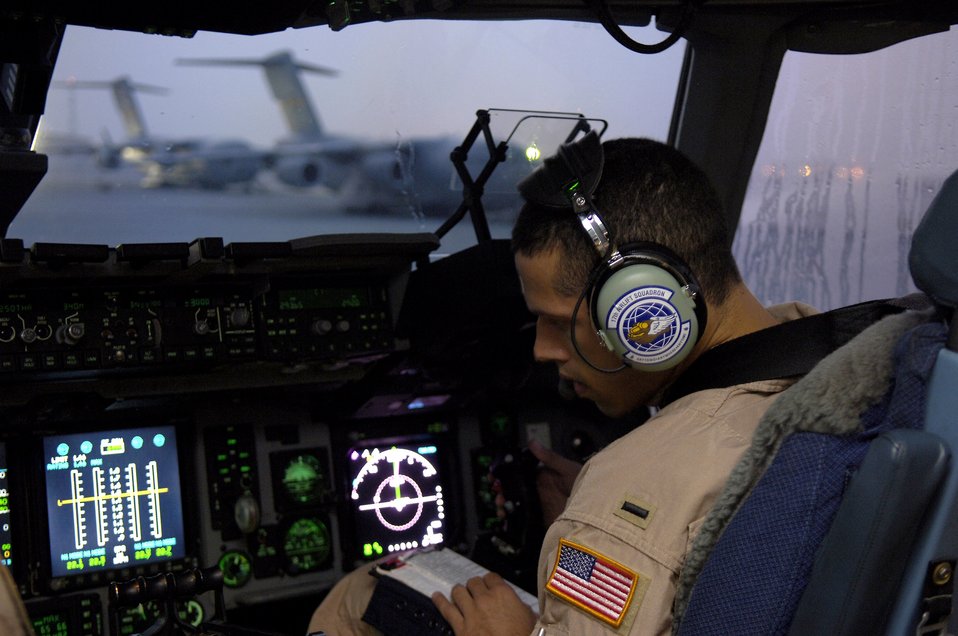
Globemaster operations

First Lt. Derek House prepares for takeoff from a forward operating base in Southwest Asia on Aug. 5. Lieutenant House is a C-17 Globemaster III pilot with the 816th Expeditionary Airlift Squadron. The squadron flew more than 1,200 sorties in July, delivering cargo and troops in support of operations Iraqi Freedom and Enduring Freedom.